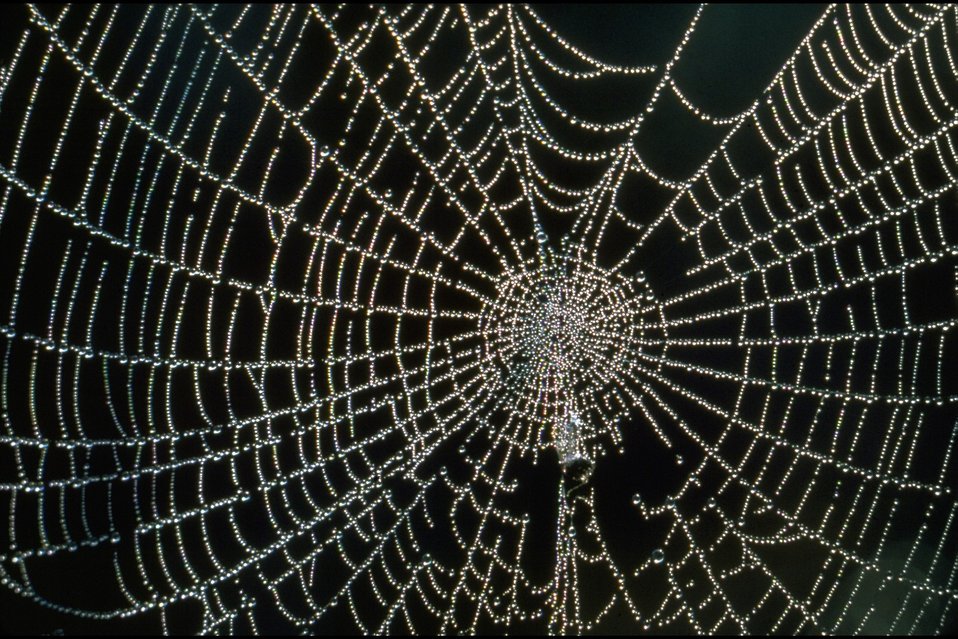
Rogue River - Spider Web.